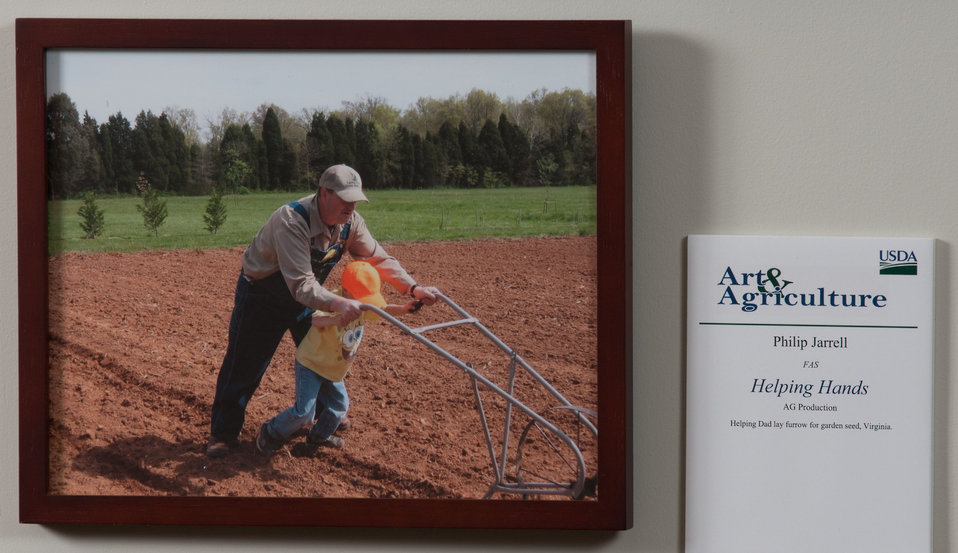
Online Viewer's Choice entries of the 2013 Art & Agriculture, Tuesday, July 9, 2013, in the South Building, Washington, D.C. Themes were expressed by employees from across the department and the contest was open to full-time and part-time USDA employees. Winning artwork will be displayed till the end of the year. U.S. Artistic expression is a creative outlet that is vital for an individual to grow and develop.